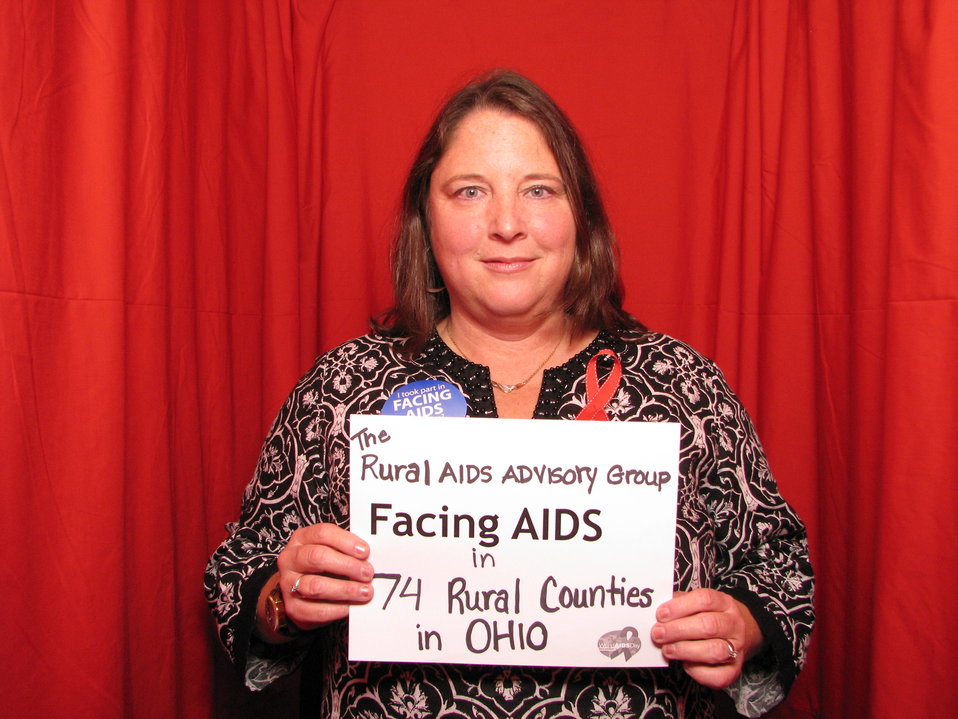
The Rural AIDS Advisory Group FACING AIDS in 74 Rural Counties in OHIO.

From the AIDS.gov photo booth at the U.S. Conference on AIDS, September 2010 (Orlando, FL).